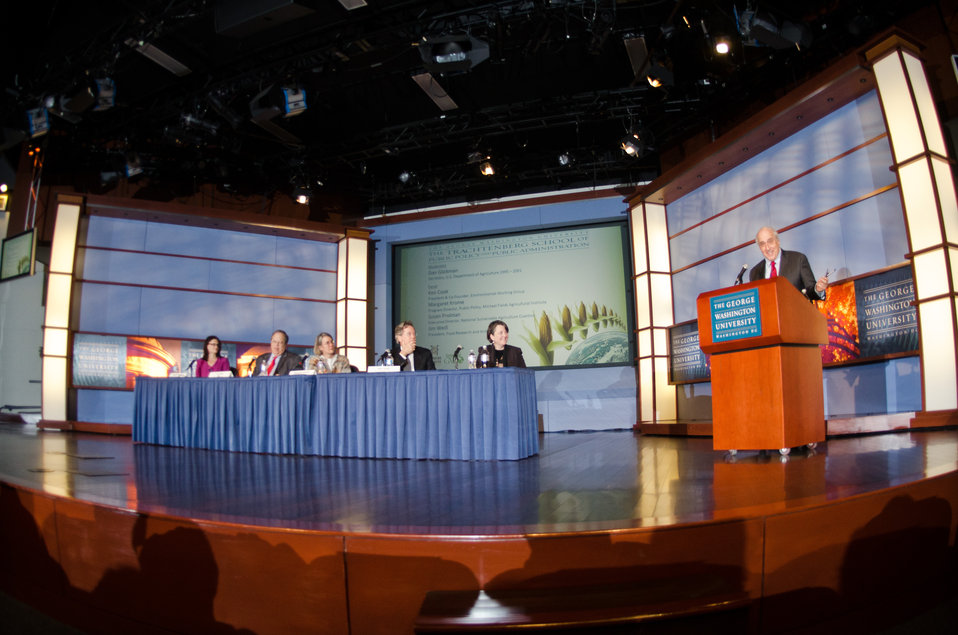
Former Agriculture Secretary and moderator Dan Glickman (right) made some opening statements before presenting an opening question to panelists (left to right) National Sustainable Agriculture Coalition Executive Director Susan Prolman, Food Research and Action Center President Jim Weill, Michael Fields Agricultural Institute Public Policy Program Director Margaret Krome, Environmental Working Group President and Co-Founder Ken Cook, Agriculture Deputy Secretary Kathleen Merrigan during the “Shaping the Farm Bill for a Sustainable Future” Forum in the Jack Morton Auditorium, at the Trachtenberg School of Public Policy and Public Administration, on the George Washington University campus in Washington, D.C., on Thursday, March 1, 2012.